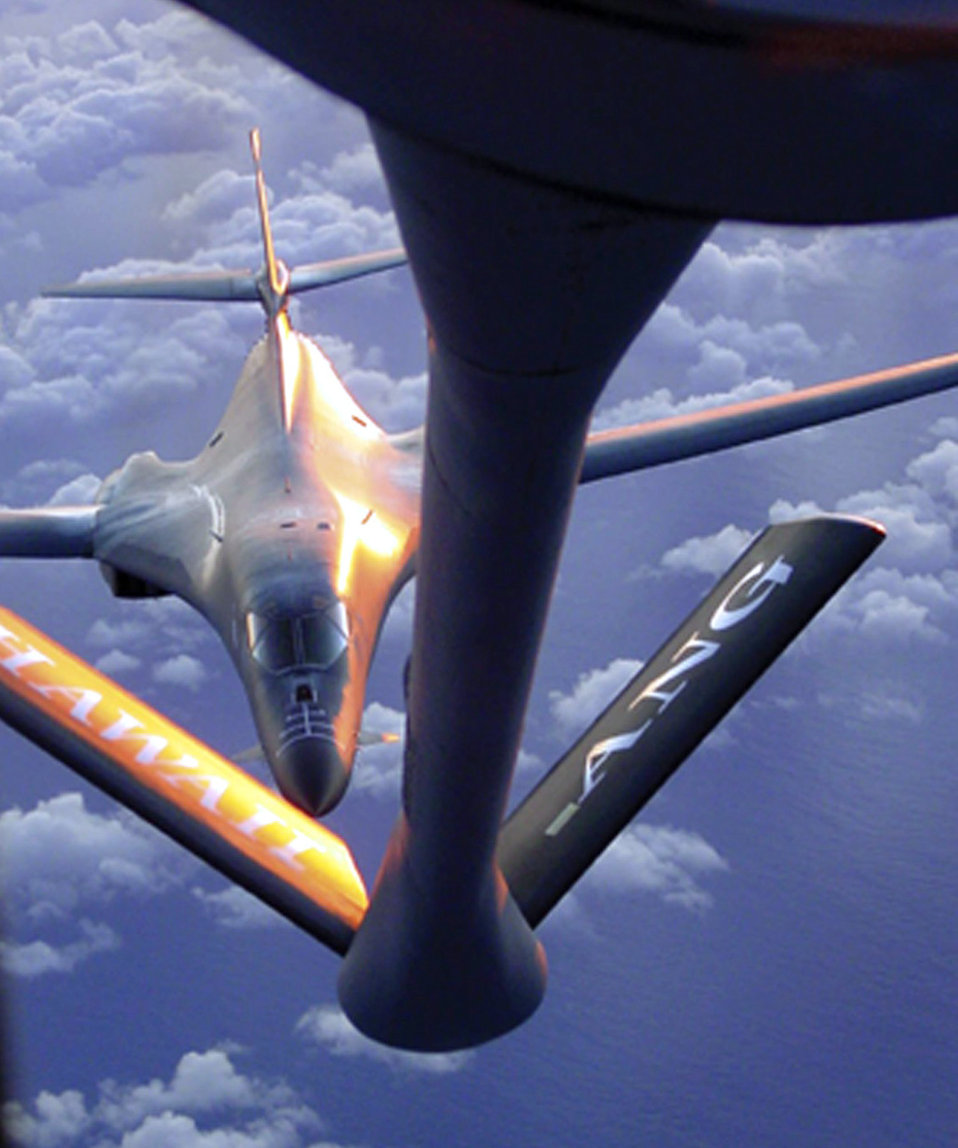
Total force strikes the Pacific

HICKAM AIR FORCE BASE, Hawaii -- A B-1B Lancer from the 37th Bomb Squadron at Ellsworth Air Force Base, S.D., lines up with the refueling boom on a Hawaii Air National Guard KC-135 Stratotanker during the last leg of the bomber's recent global power mission.